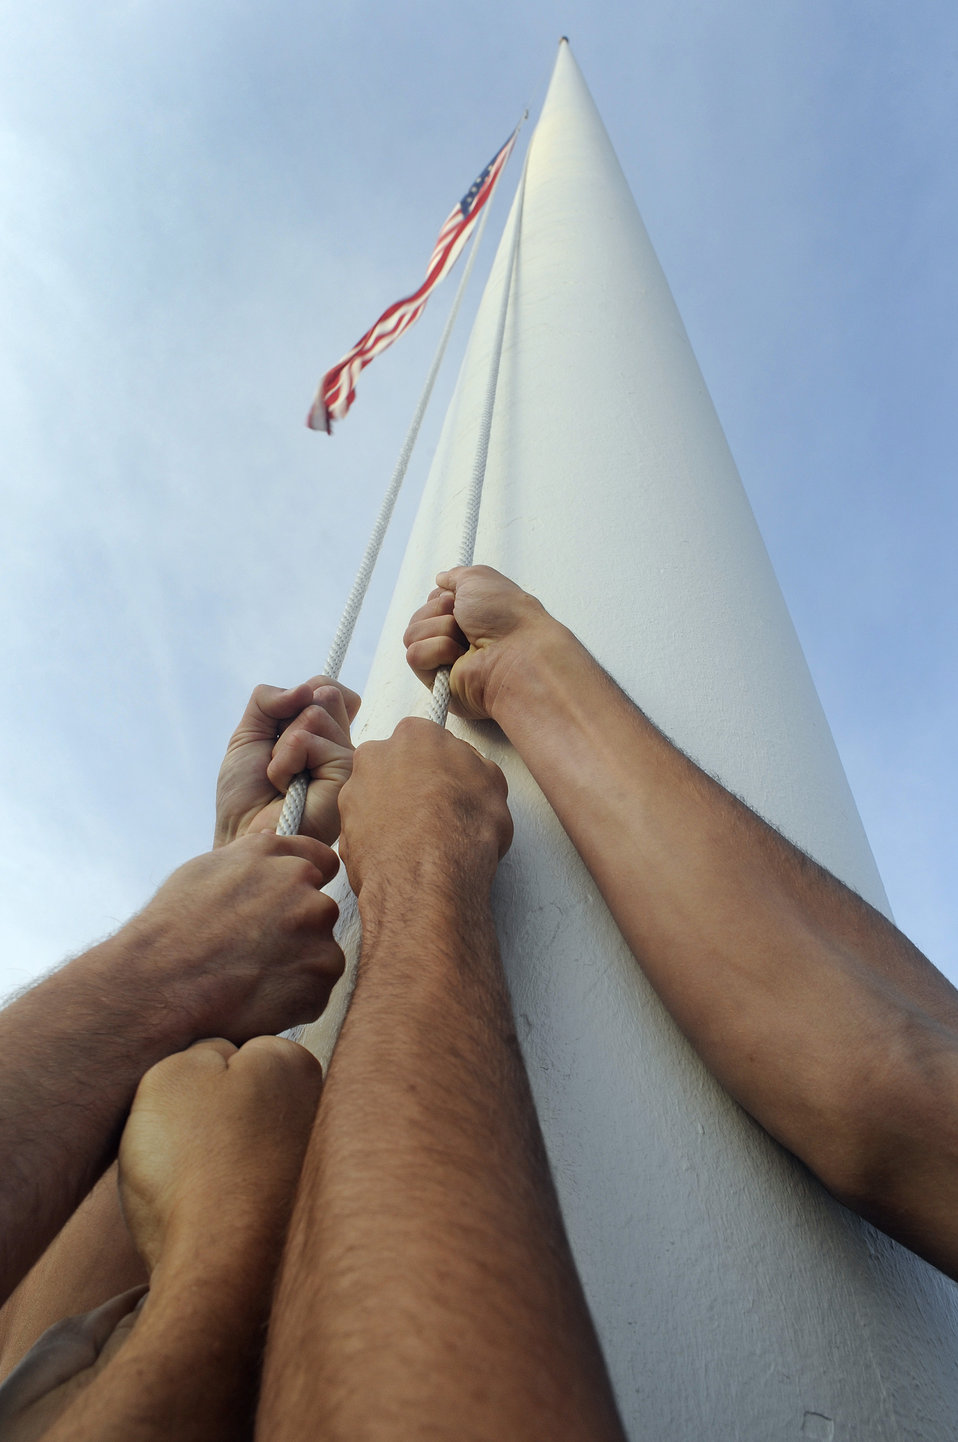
Reveille Ceremony

The cadet flag detail raises the American flag during a reveille formation in honor of Patriot's Day and the Fallen Heroes of 9/11 on Sept. 11, 2009, at U.S. Air Force Academy, Colo.